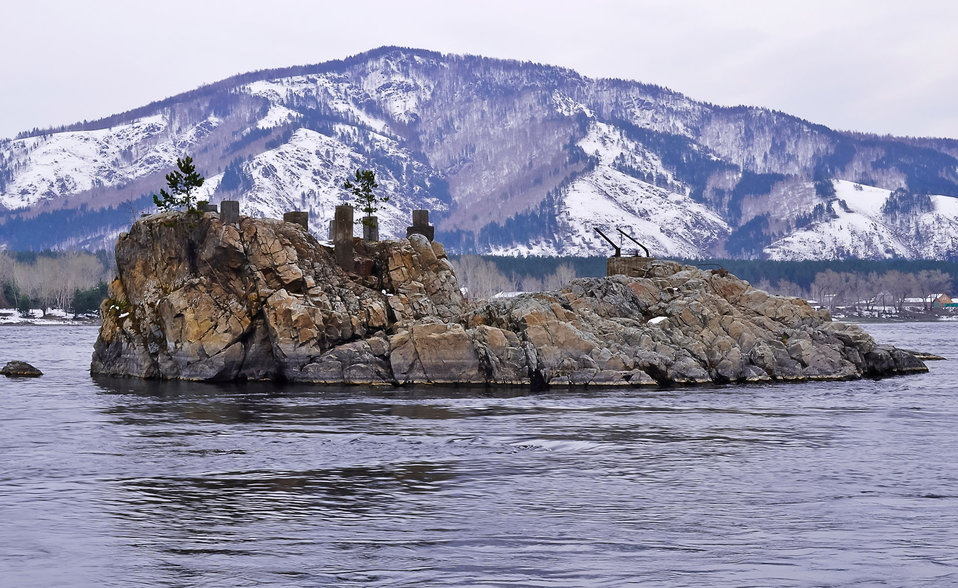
The island on the river

Stone island in the middle of the river.